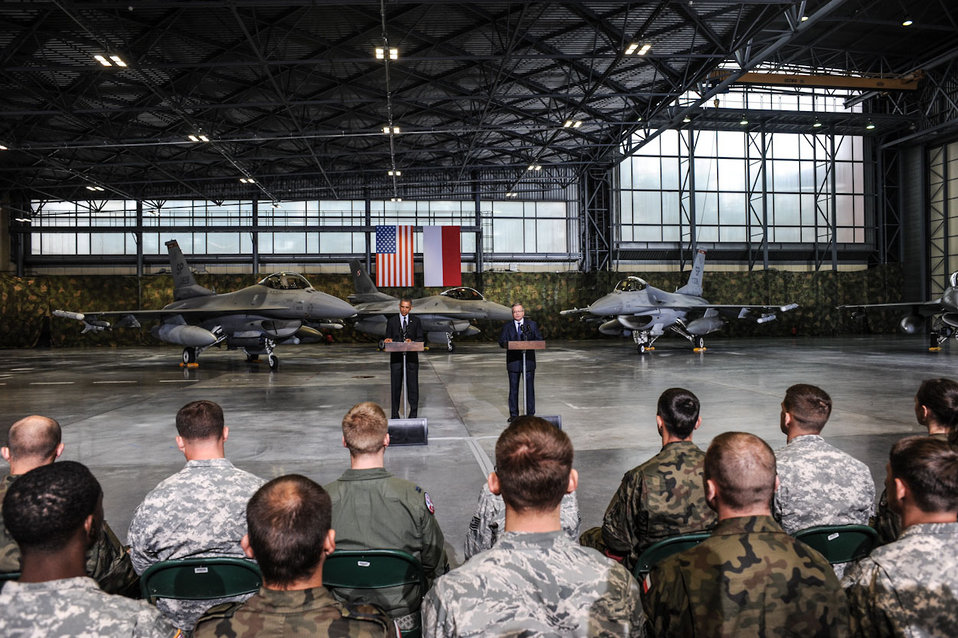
President Obama and Polish President Komorowski Address U.S. and Polish Airmen

U.S. President Barack Obama, left, and Polish President Bronislaw Komorowski stand in front of a F-16 jet fighter as they speak to the press at the Okecie Military Airport in Warsaw, Poland, on June 3, 2014. [U.S. Mission to Poland photo by Jakub Szymczuk]